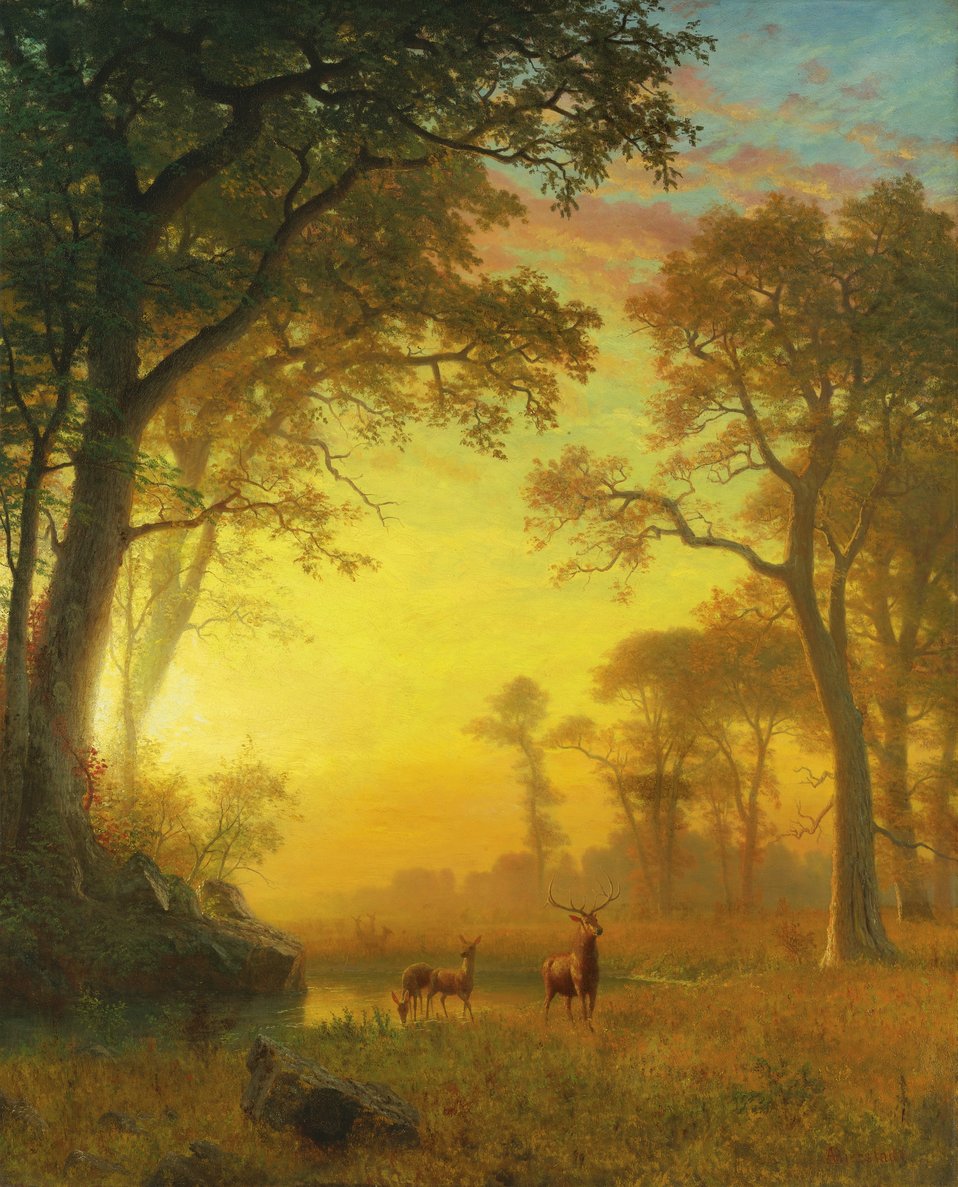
Albert Bierstadt - Light in the Forest